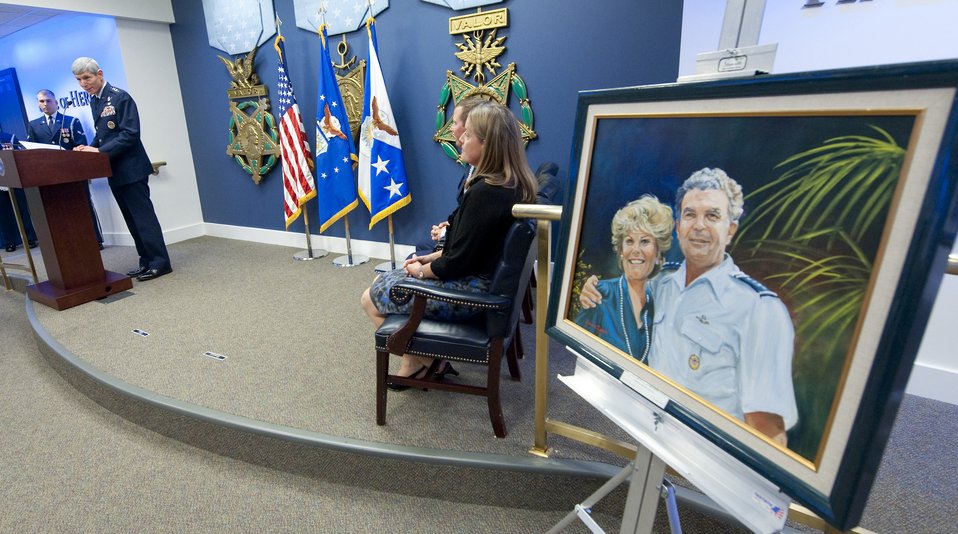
O'Malley Award

Air Force Chief of Staff Gen. Norton Schwartz (left) introduces Brig. Gen. Thomas W. Bergeson and his wife Pamela during a ceremony in the Pentagon Oct. 4, 2010, prior to presenting them with the General and Mrs. Jerome F. O'Malley award. The award is presented annually to the wing commander and spouse team who have best exhibited their own courage, power, grace and beauty in caring for Air Force families. The award was established after the O'Malleys, shown in the oil painting, who were known for their leadership and contributions to Air Force families and communities, were tragically killed in a plane crash in 1985.